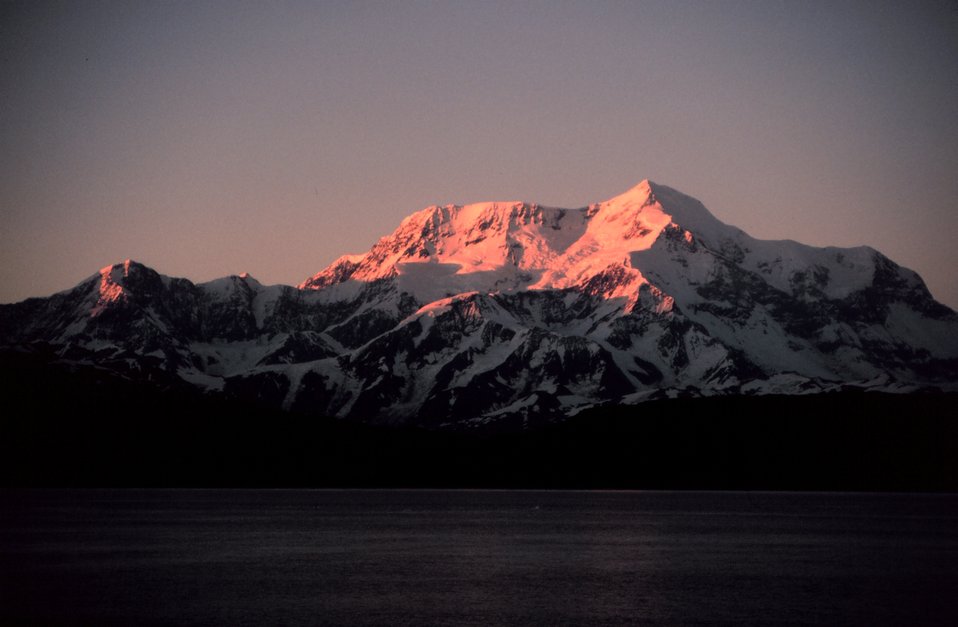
Photo #14 of Mount St. Elias sequence. Mount Saint Elias is one of the largest mountains visible from the sea on the North American continent. It rises to a height of 18,008 feet in a distance of less than 20 miles from sea level at Icy Bay.